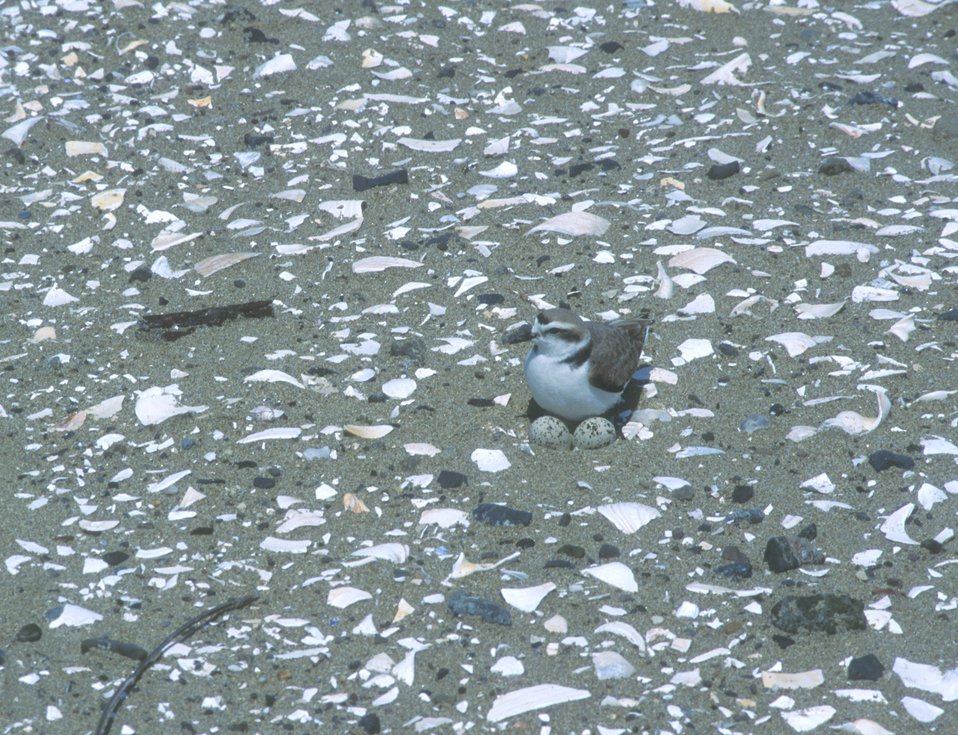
Western Snowy Plover female on eggs in nest